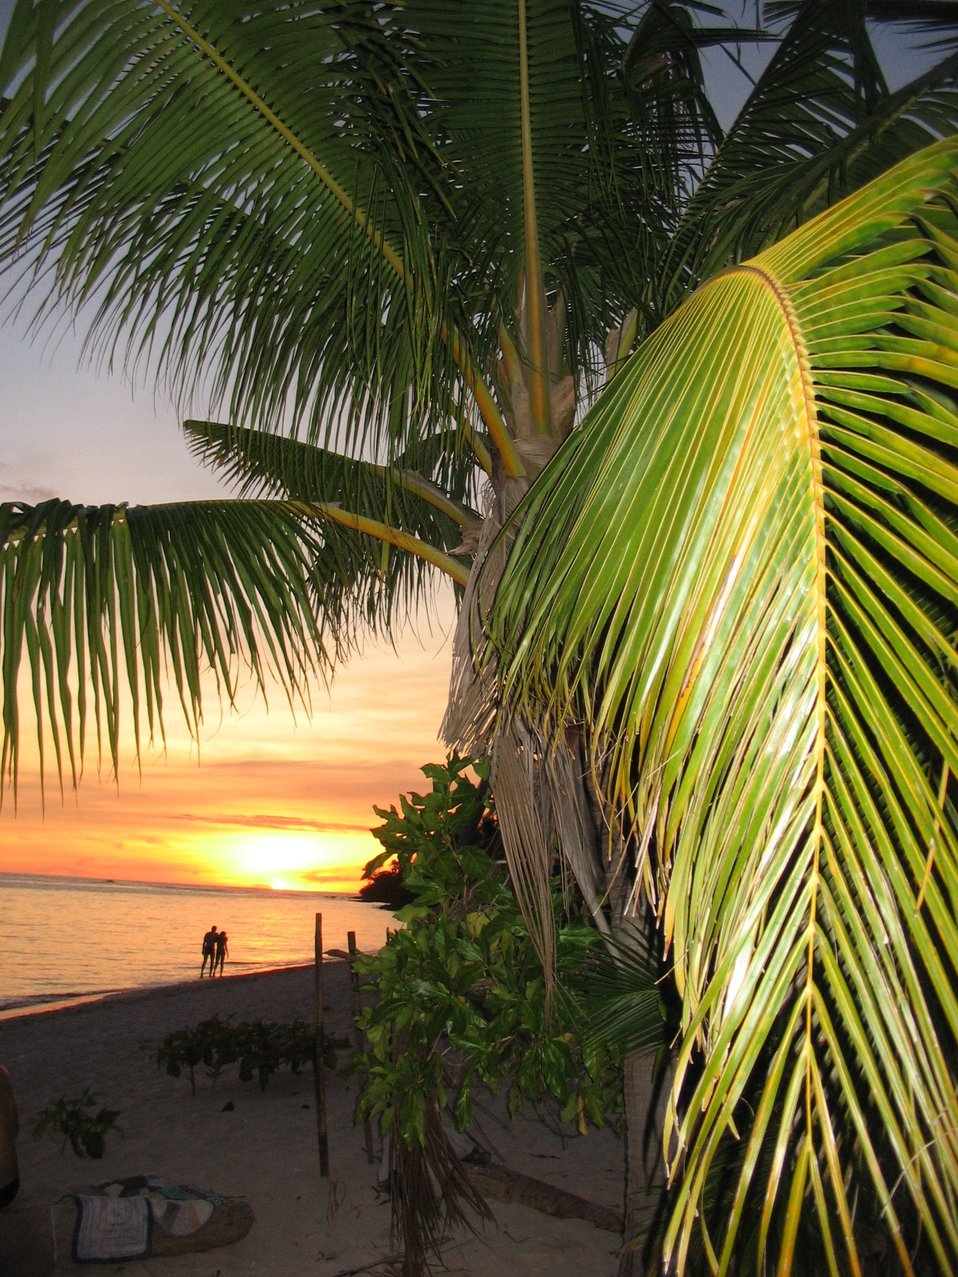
Palm fronds and a couple strolling in the water highlighted by a tropical sunset.